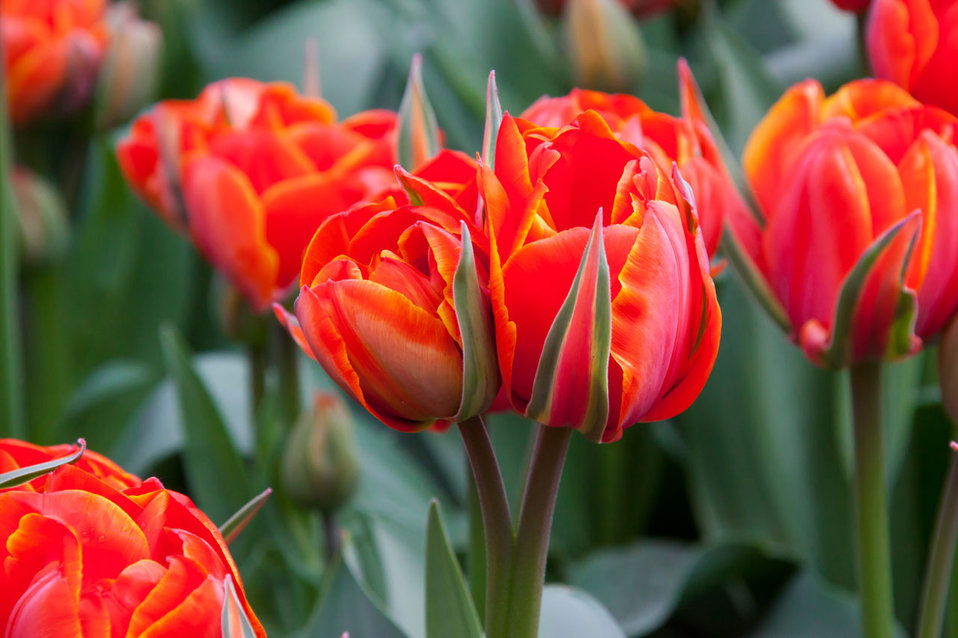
Red tulip flowers

Beautiful red tulips in keukenhof gardens.